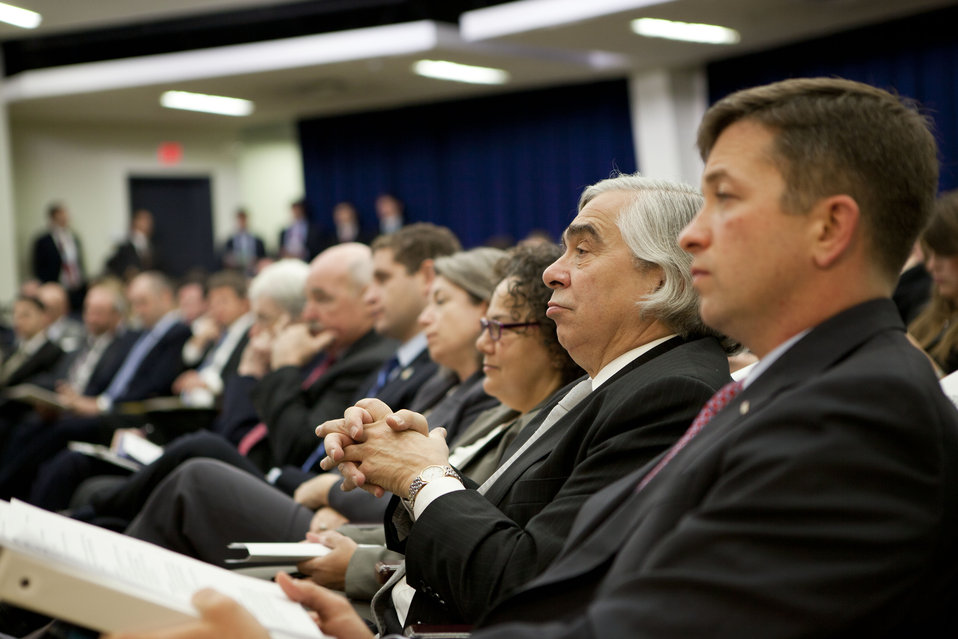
Secretary Moniz and CEQ Chair Nancy Sutley watch remarks by White House Chief of Staff, Denis McDonough.